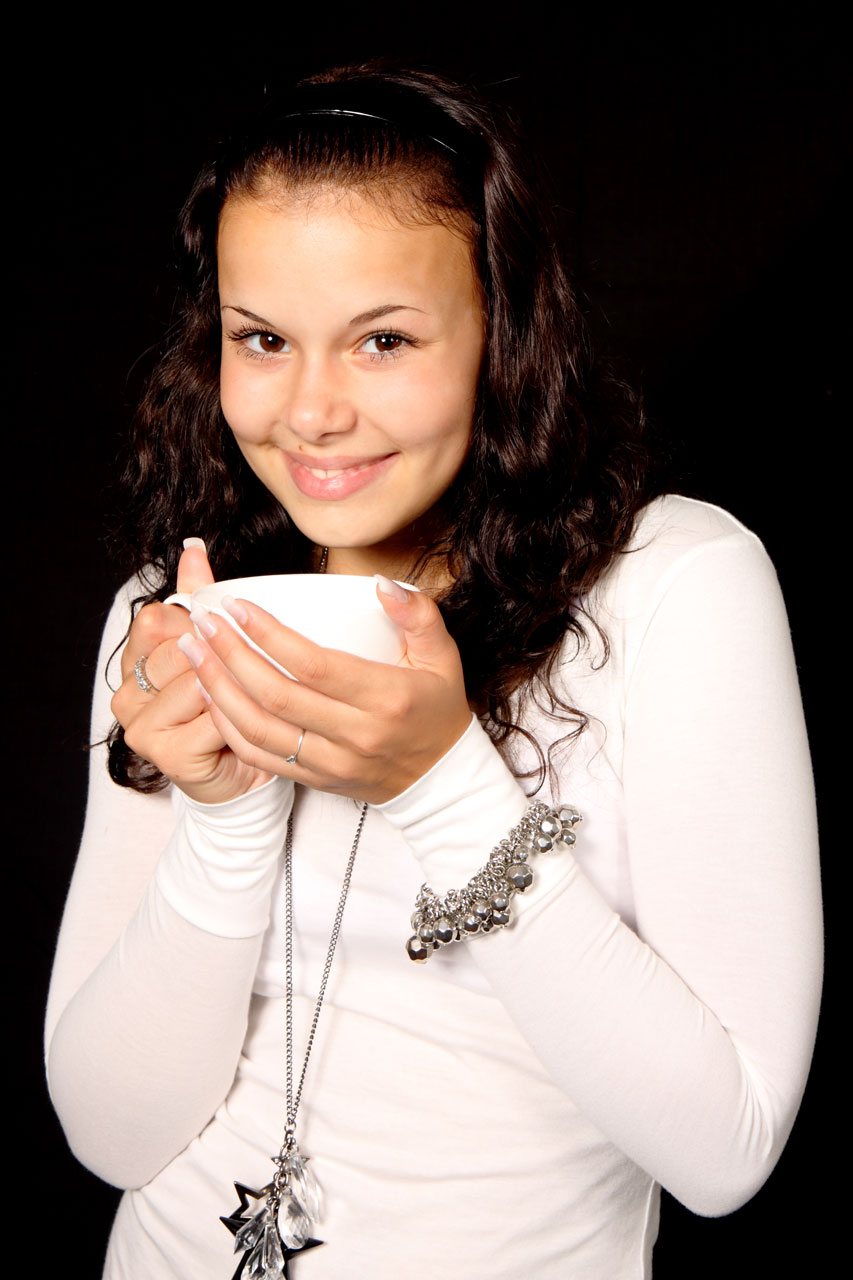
Woman holding coffee

Young woman holding a cup of coffee.